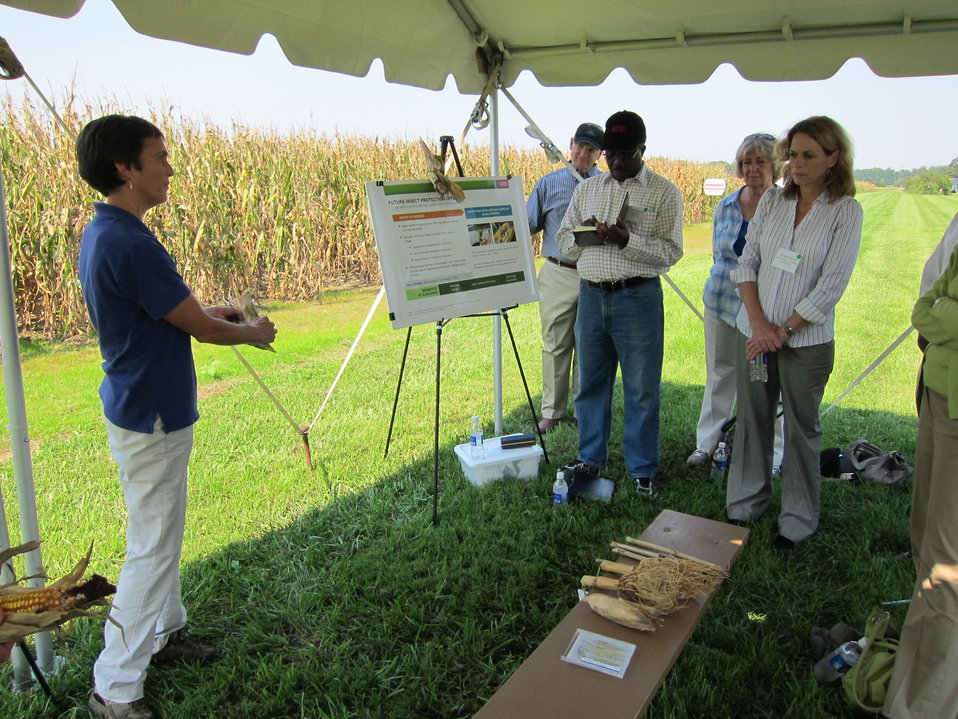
Gladys Moreau Listens to DuPont's Natalie Hubbard

Gladys Moreau of the Bureau of Economic, Energy and Business Affairs, second from right; listens to Natalie Hubbard, DuPont's Director of Biotechnology Affairs, leads a discussion on 'The Role of Biotechnology in Advancing African Agriculture,” at Chesapeake Farms in Maryland on September 14, 2011.